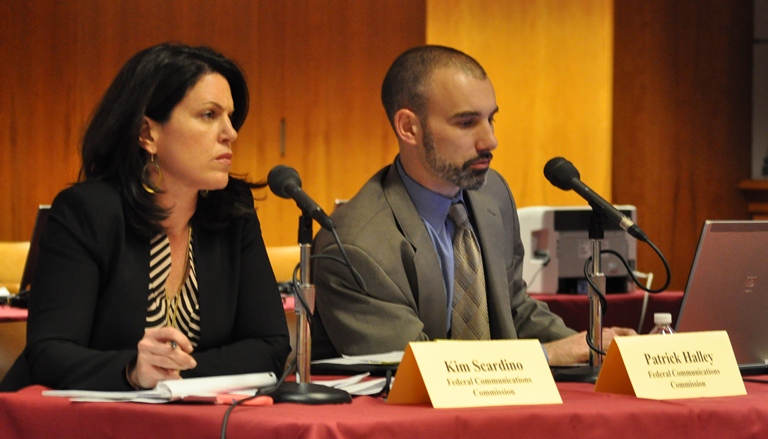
Rural Broadband Workshop: March 19, 2014

Moderators for Panel 3: State Strategies to Meet the Rural Broadband Challenge